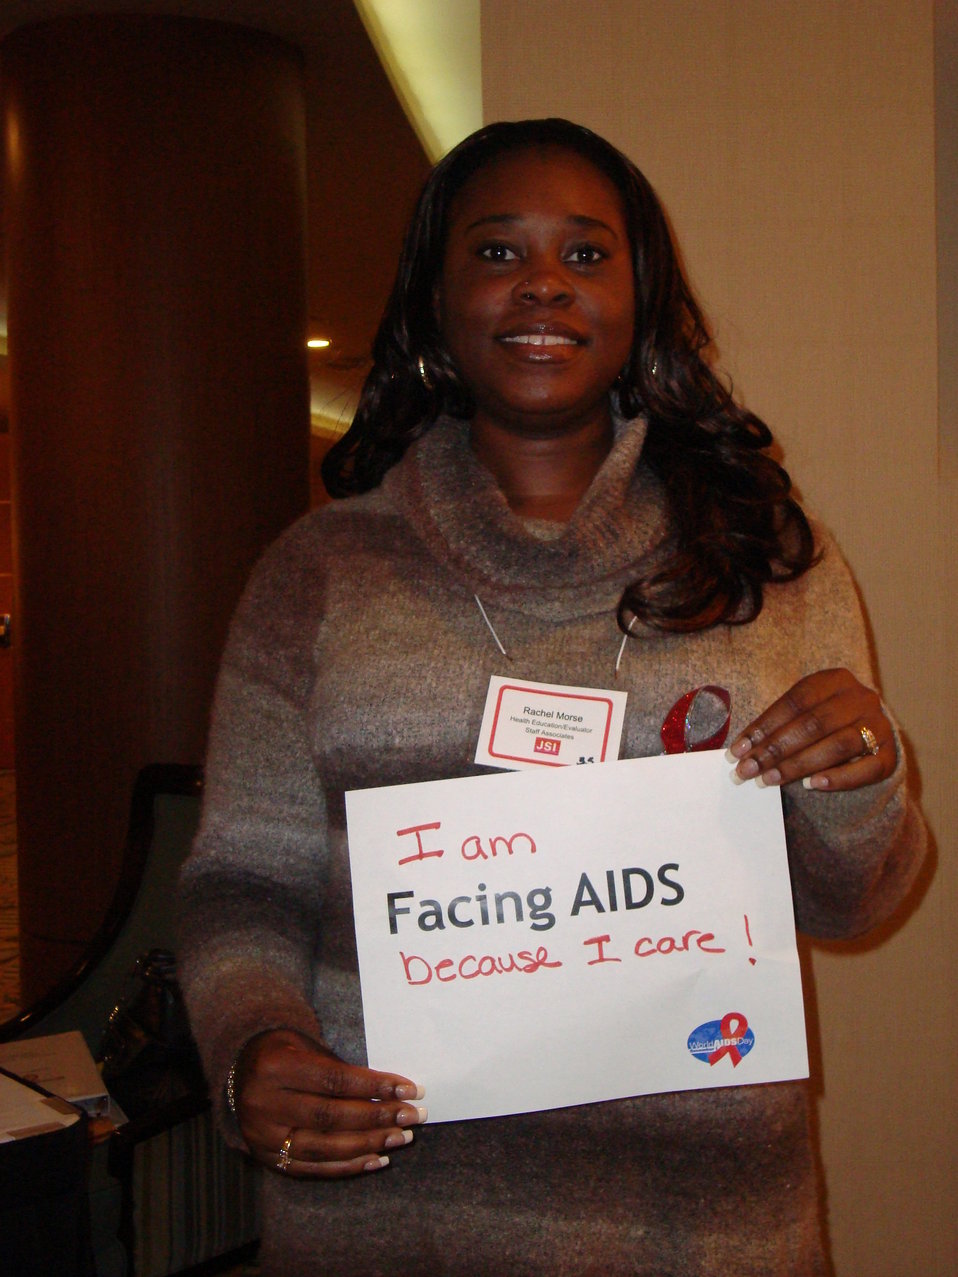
FacingAIDSCampaign 036